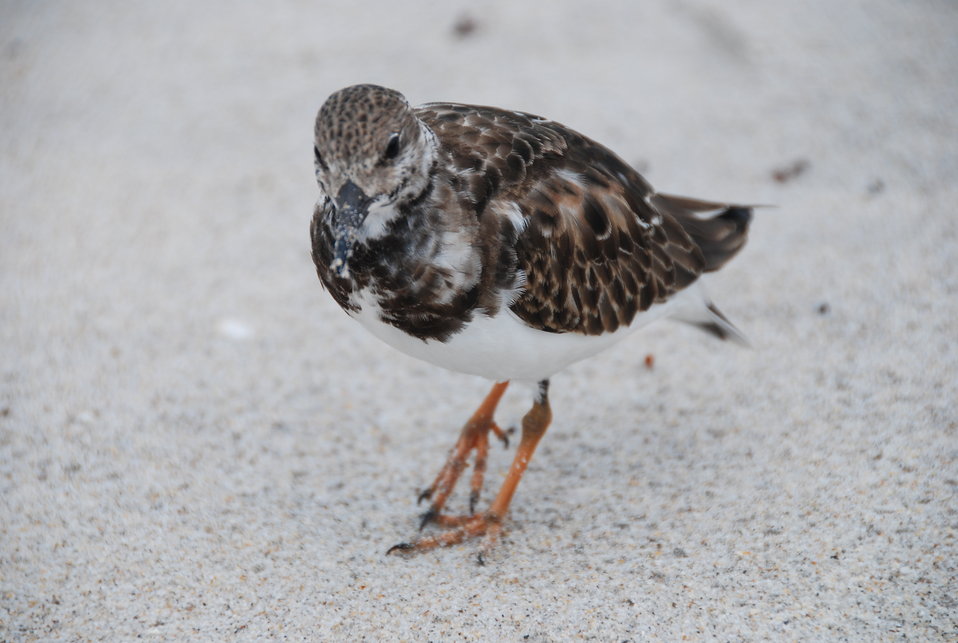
Ruddy turnstone

In non-breeding plumage.